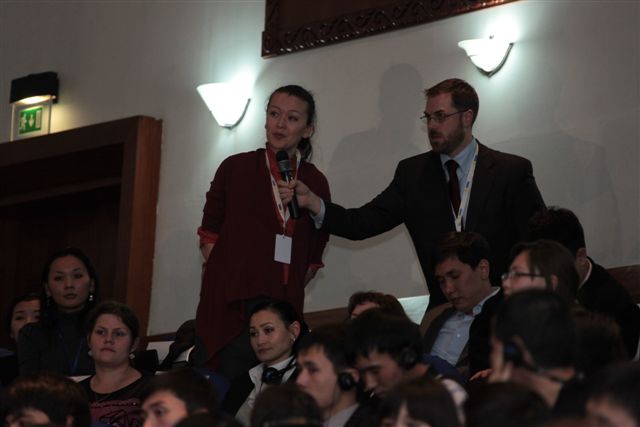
A Student Asks Secretary Clinton a Question

A student asks U.S. Secretary of State Hillary Rodham Clinton a question at the Town Hall on Empowering Civil Society for Central Asia's Future at Eurasian University in Astana, Kazakhstan, on November 30, 2010.